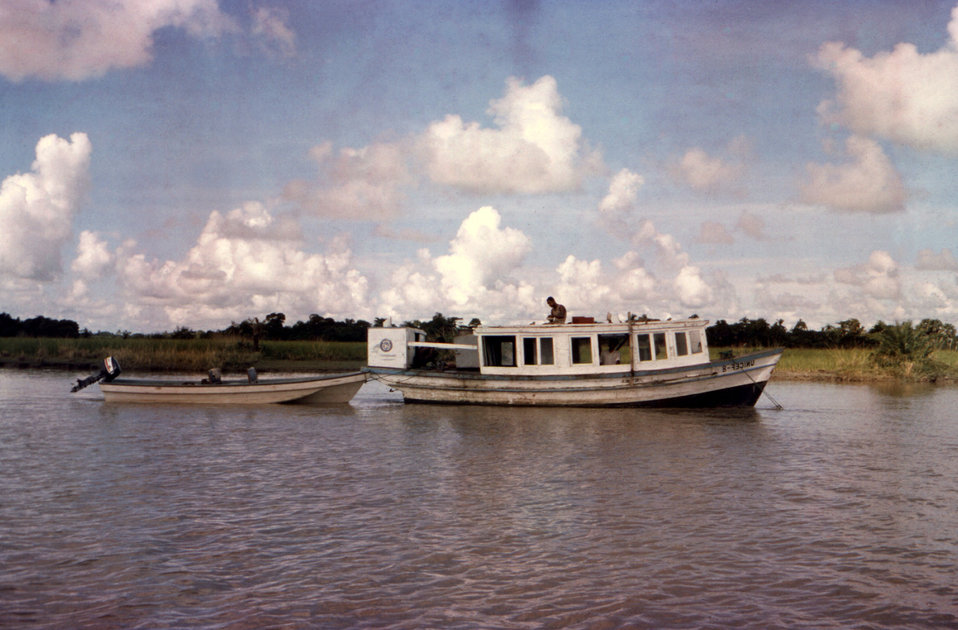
This October, 1975 photograph, depicted a 'UNICEF 8' boat in the act of towing a 'speedboat', on a Patuakhali District waterway, in the country of Bangladesh.